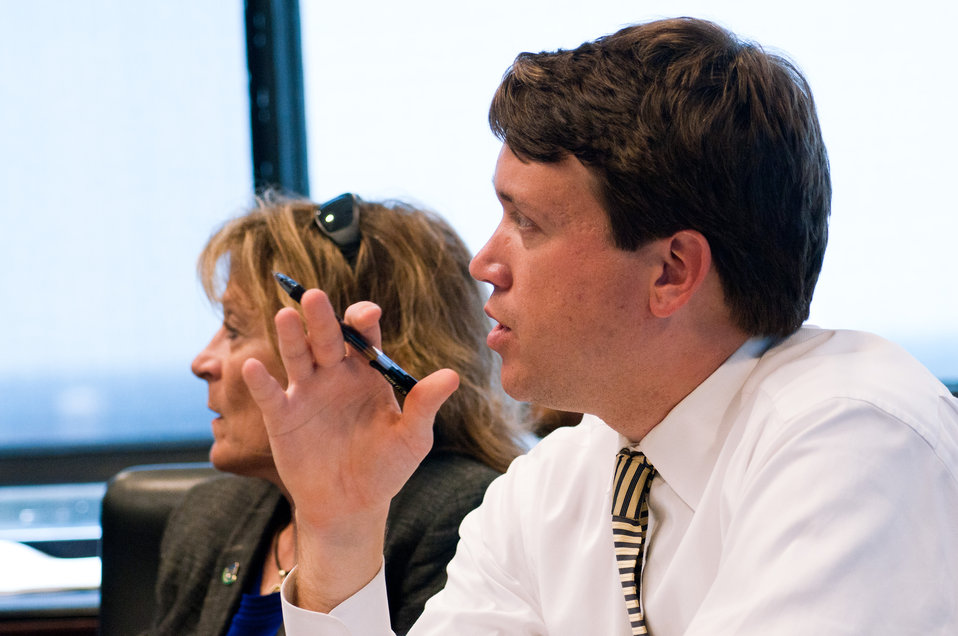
More than a dozen organizations participated in the Mississippi emergency housing task force meeting on Thursday, May 19, 2011, in Jackson, MS. A better understanding of how USDA can help was gained in this meeting.